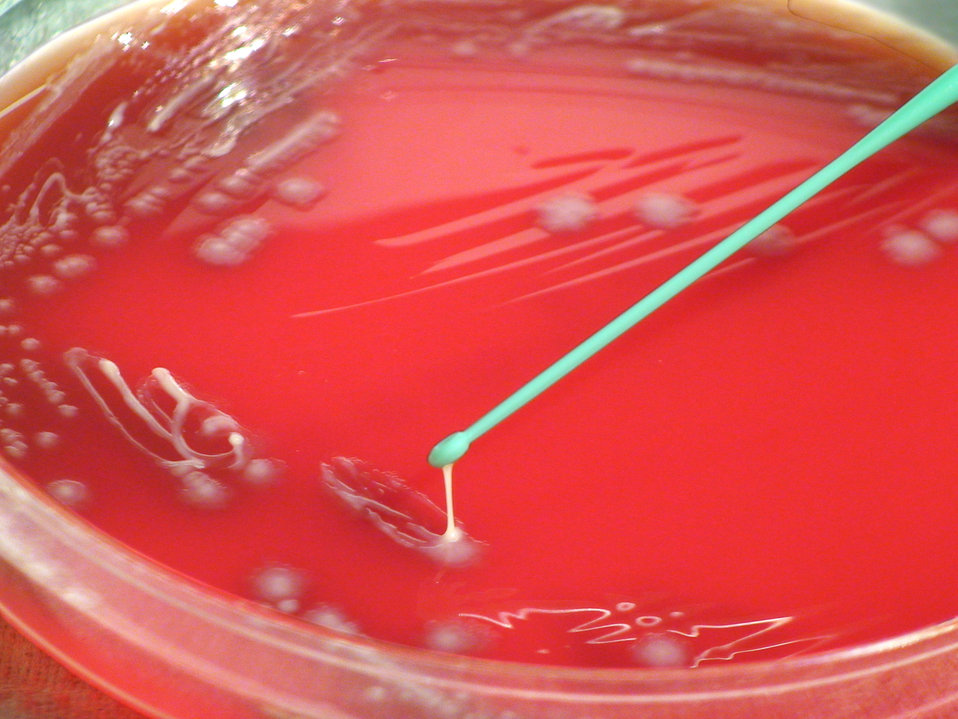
This photograph depicts the colonial morphology displayed by Gram-negative Yersinia pestis bacteria, which was grown on a medium of sheep's blood agar (SBA), for a 48 hour time period, at a temperature of 37�C. See PHIL 12492, for an additional view revealing the tenacious nature of these colonies when touched by an inoculation loop, and their tendency to form 'stringy', sticky strands.